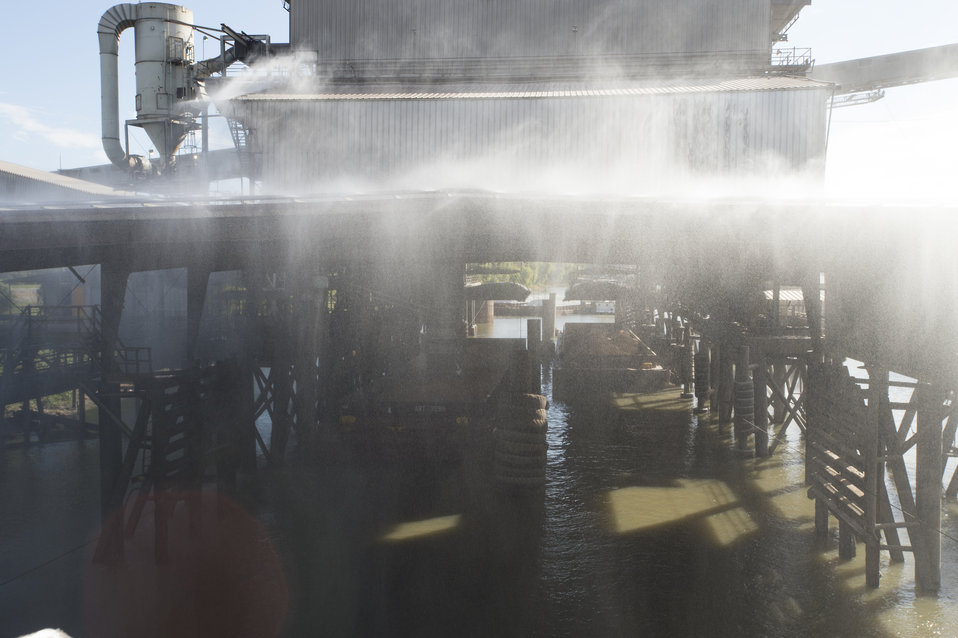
U.S. Department of Agriculture (USDA) Grain Inspection, Packers and Stockyards Administration (GIPSA) Federal Grain Inspection Service (FGIS) grain stations are washed down to cleanse loading and unloading areas and to prevent grain dust buildup near the Port of New Orleans in New Orleans, LA on Tuesday, Nov. 19, 2013.